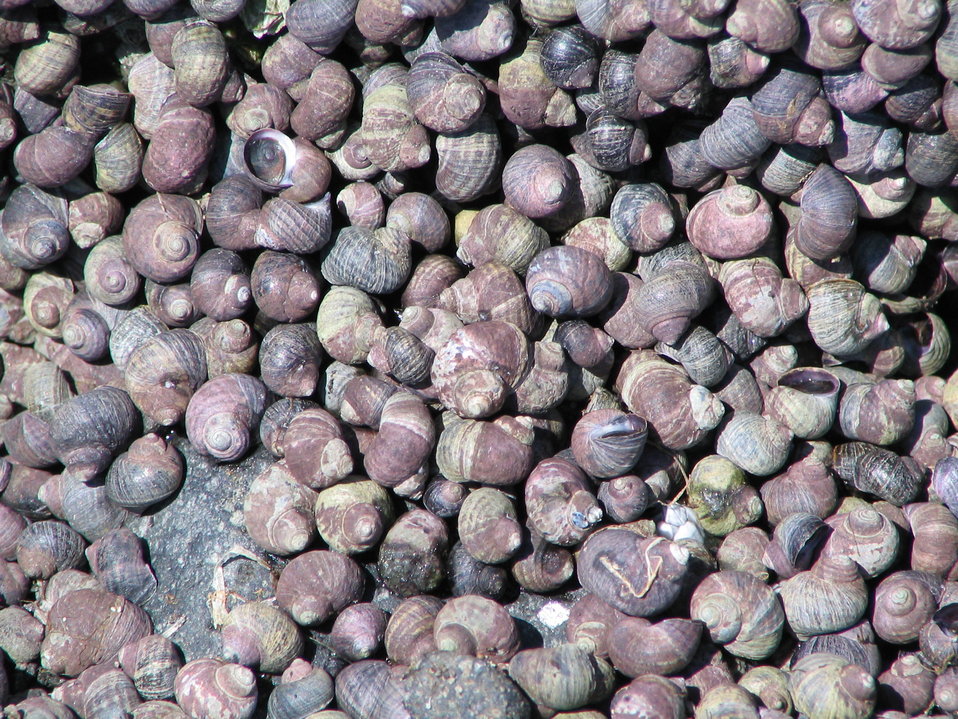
Periwinkles Kinzarof Lagoon

Kinzarof Lagoon, Izembek National Wildlife Refuge